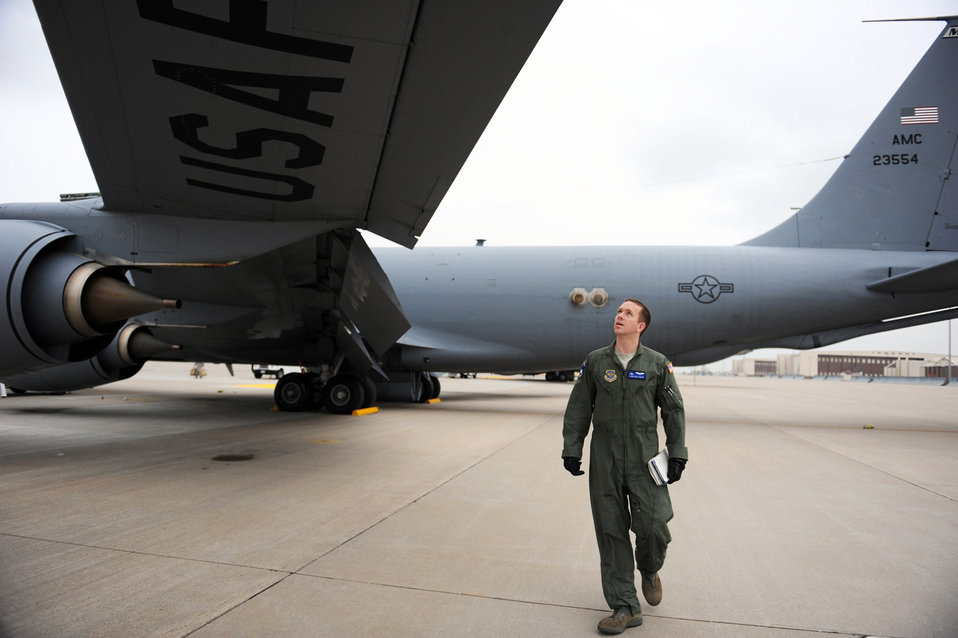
KC-135 Stratotanker refueling mission

Capt. Courtland Stanley conducts a preflight check on the historic